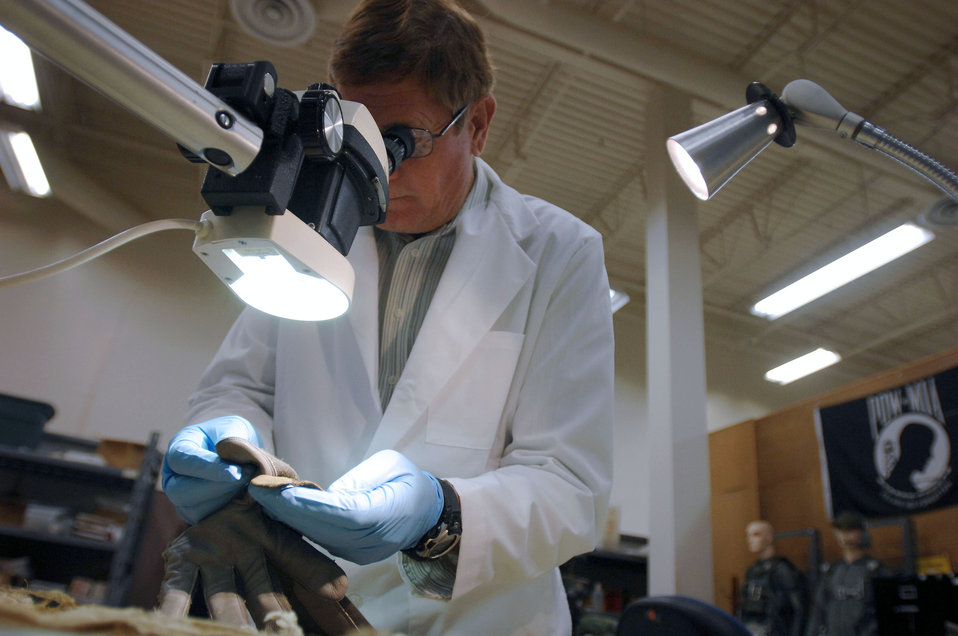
Brooks lab offers last-ditch effort to identify remains

Equipment Analyst Neill Smith inspects a glove sample recovered from an aircraft crash site in an attempt to identify the servicemember lost in the crash Nov. 4 at Brooks City-Base, Texas. The analysts at the Life Sciences Equipment Laboratory at Brooks City-Base in San Antonio use equipment at the lab as comparisons to the artifacts shipped to the lab from a recovery site.